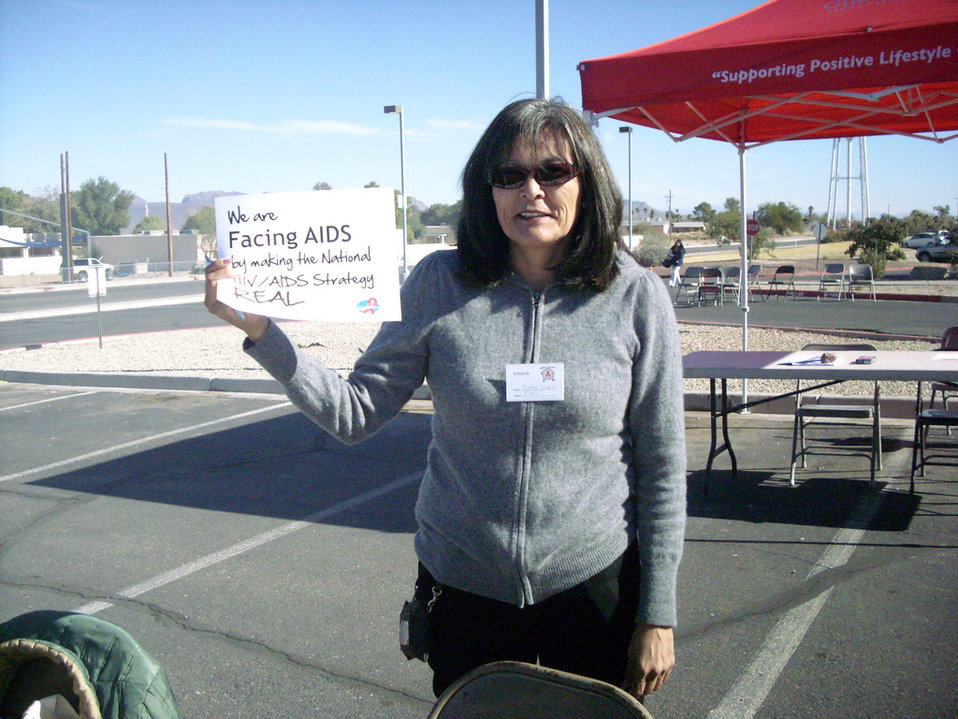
We are Facing AIDS through NHAS-03